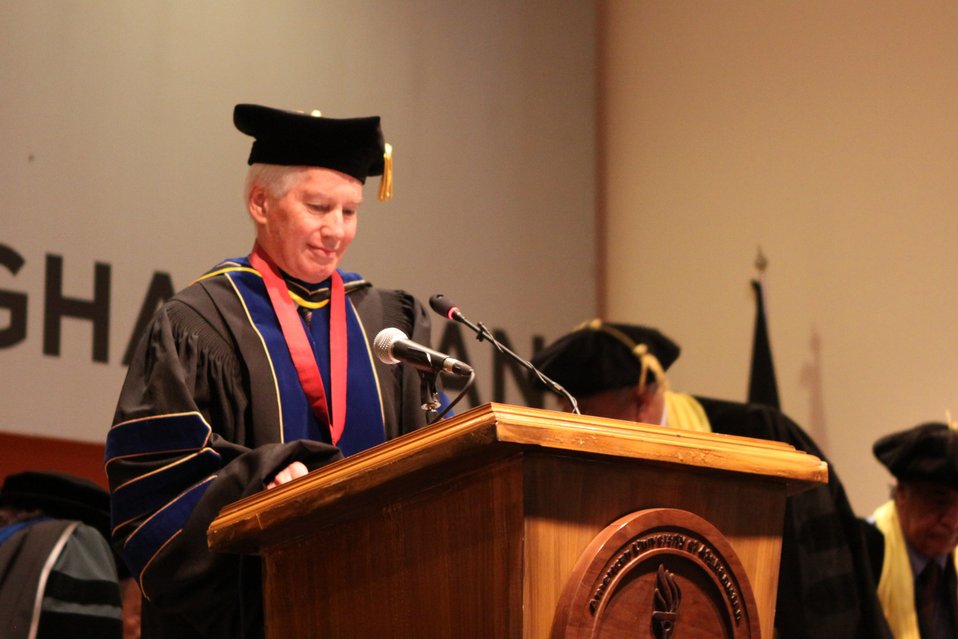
100526 AUAF Graduation 180